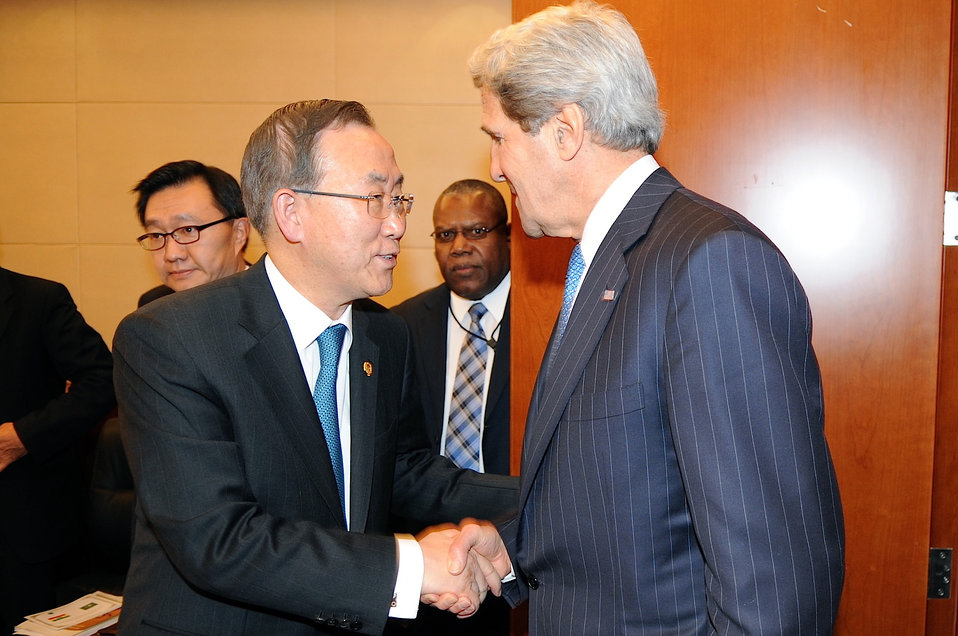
Secretary Kerry Meets With UN Secretary-General Ban Ki-moon at the African Union Summit

U.S. Secretary of State John Kerry meets with UN Secretary-General Ban Ki-moon as they both attend the 50th anniversary African Union Summit in Addis Ababa, Ethiopia, on May 25, 2013.